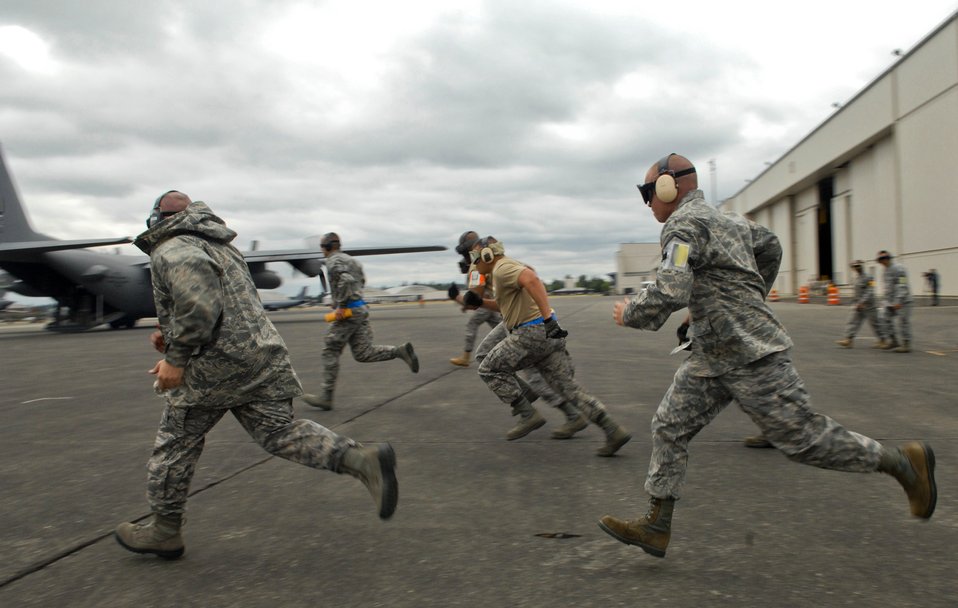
Air Mobility Rodeo 2011

Airmen with the 615th Contingency Response Wing, based at Travis Air Force Base, Calif., participate in training July 25, 2011 at Joint Base Lewis-McChord, Wash. during Air Mobility Rodeo 2011. The Air Mobility Rodeo is Air Mobility Command's biennial readiness competition that focuses on improving the professional core abilities of air mobility forces from the Air Force and allied nations.